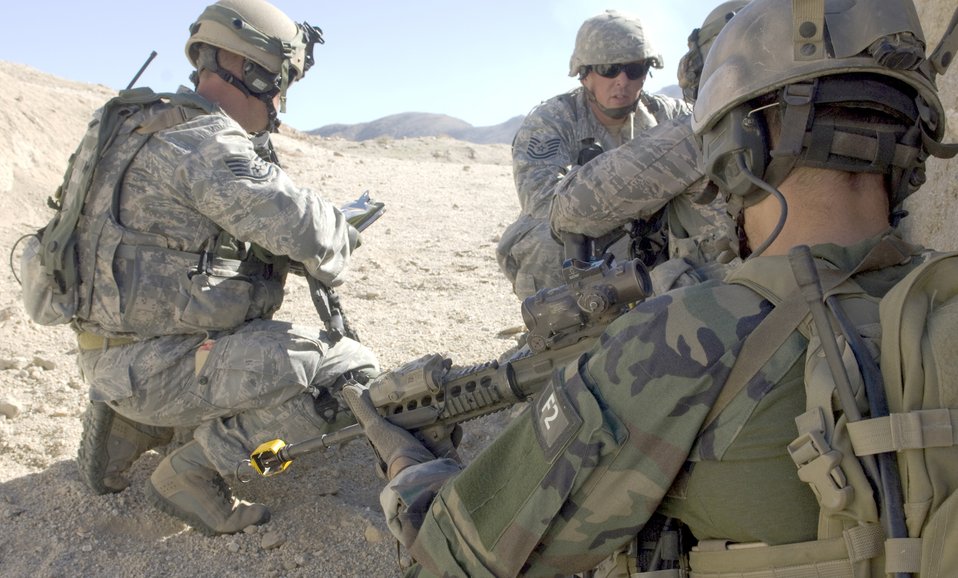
Combat training scenario

Tech. Sgt. Michael Shropshire (center) provides instruction to Tactical Air Control Party students Nov. 1, 2010, at the training range on Fort Irwin, Calif. Sergeant Shropshire is the Chief of Standards and Evaluations for the12th Combat Training Squadron.